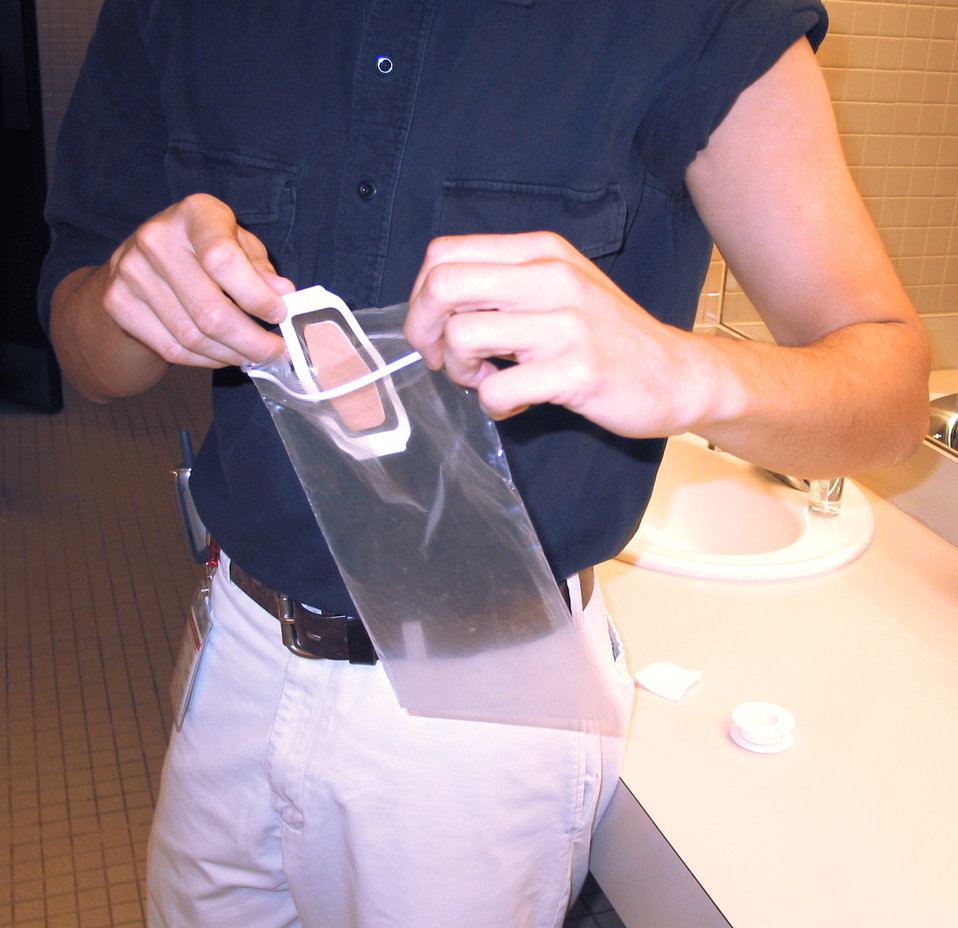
This smallpox vaccinee is shown properly placing a contaminated waterproof bandage into a sealable plastic bag.